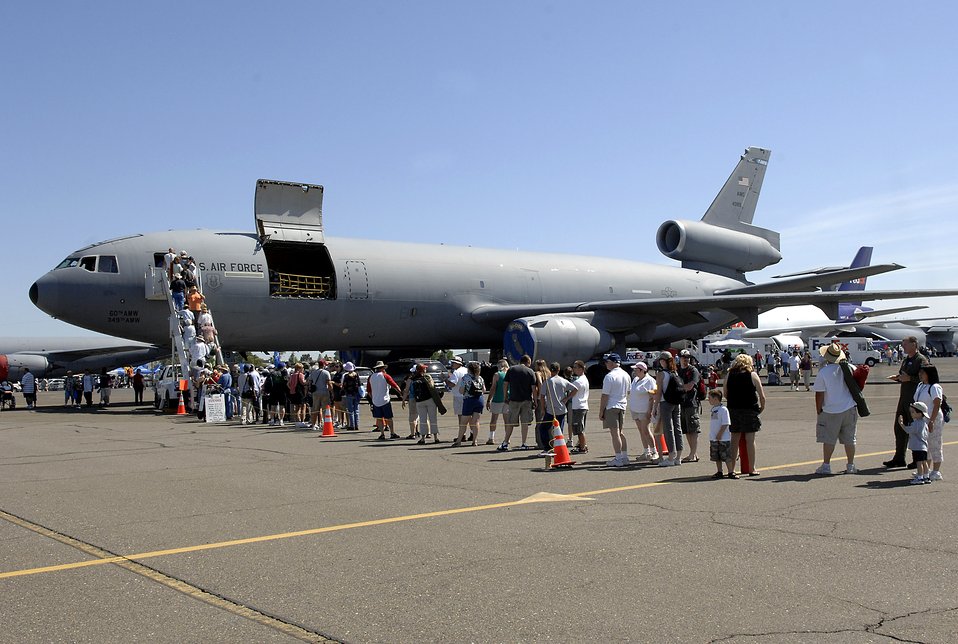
California Air Force Week

People line up to see the inside of a KC-10 Extender at the California Capital Air Show in Sacramento, Calif., June 9. The air show was the last event of Air Force Week California. The purpose of Air Force Week is to inform and educate the American public about the importance and roles of the Air Force in America's national defense. More than 50,000 people attended the air show featuring the Air Force Thunderbirds and numerous Air Force aircraft.